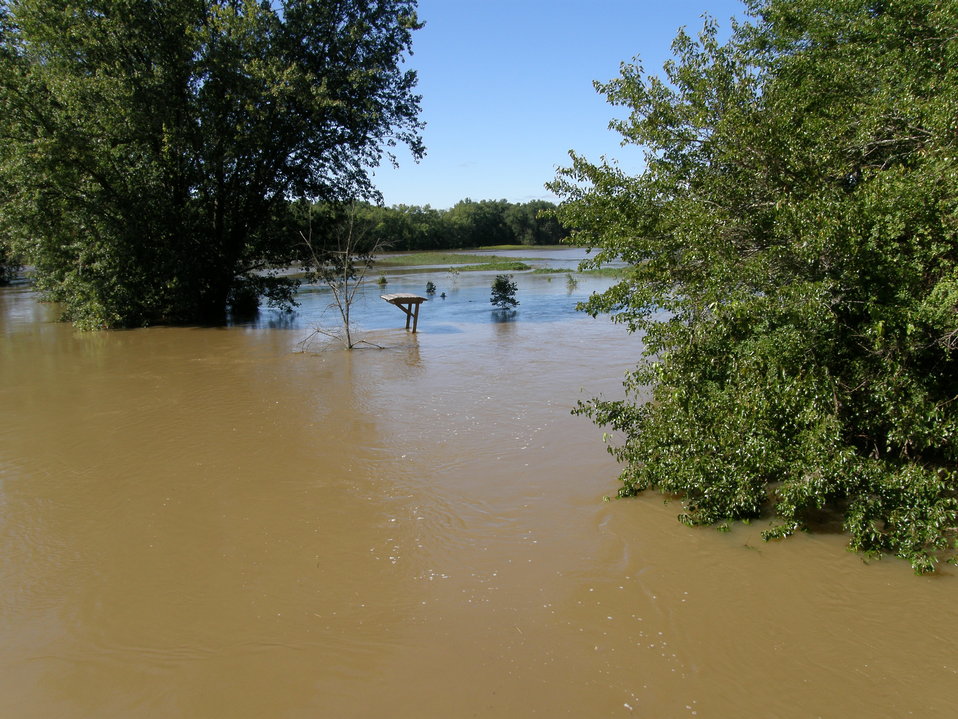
Hurricane Damage at Wallkill River National Wildlife Refuge August 30, 2011

Flooding at Bassett's Bridge Canoe Launch and fishing access area, Sussex, NJ.